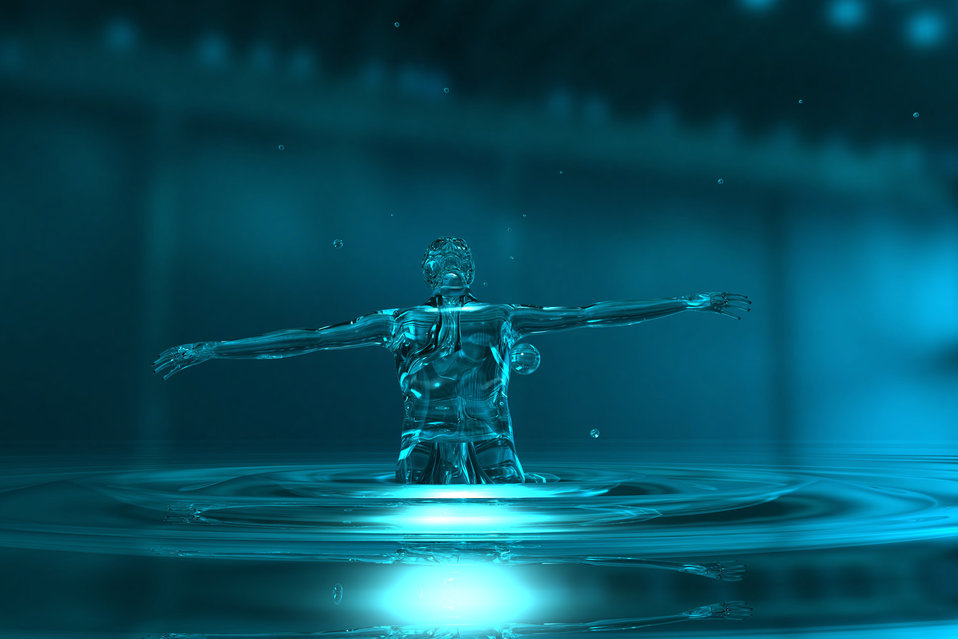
Born out of the water

3d image of the appearance of the water.